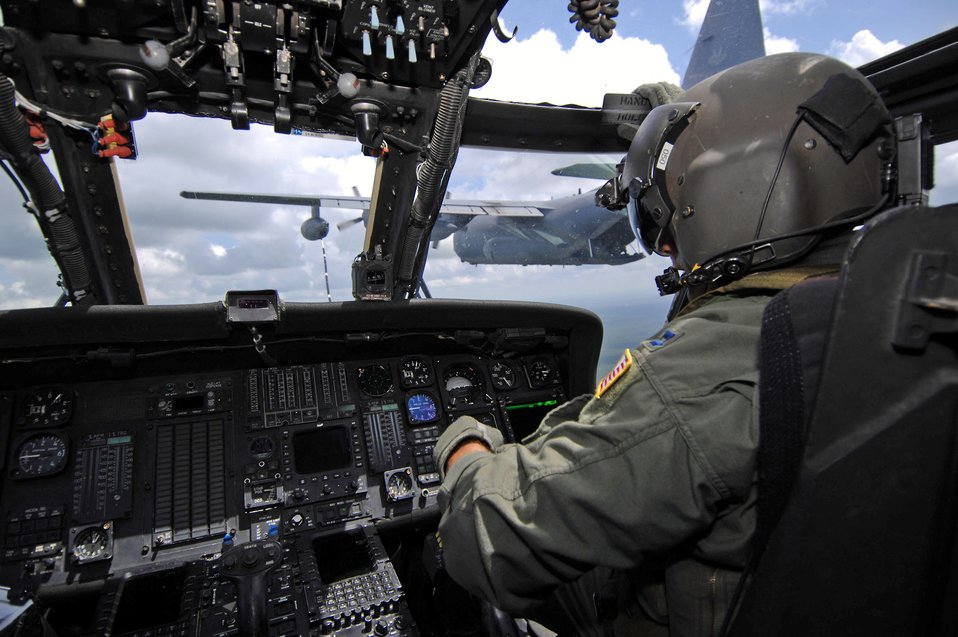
Steady as she goes

Capt. Jason Chambers monitors the flight instruments in his HH-60 Pave Hawk during an aerial refueling mission with a C-130 Hercules June 27. Captain Chambers is assigned to the 41st Rescue Squadron at Moody Air Force Base, Ga.